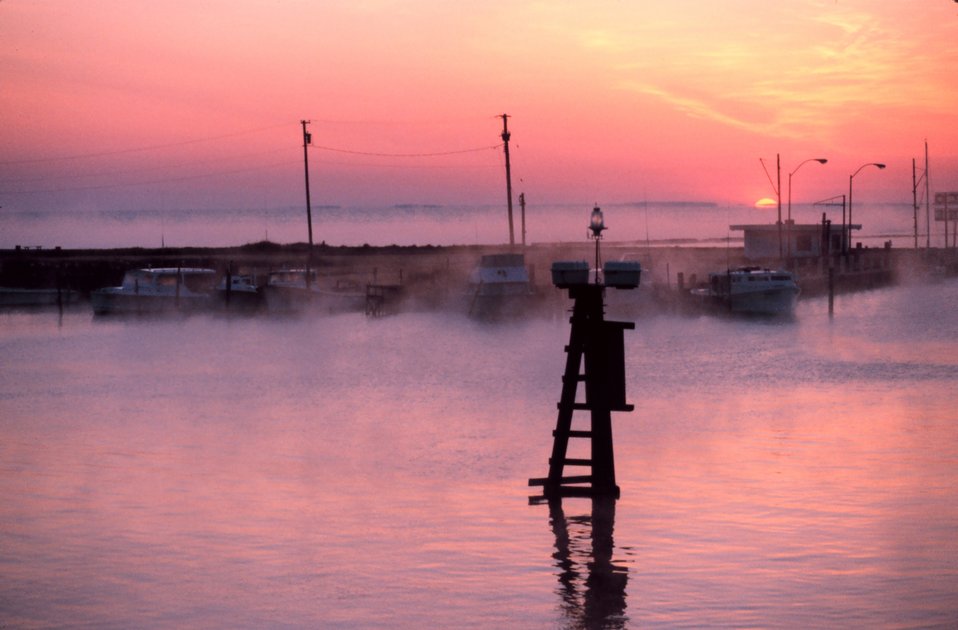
Advection fog and the morning sun coming up over the Chesapeake Bay and Fishing Creek.